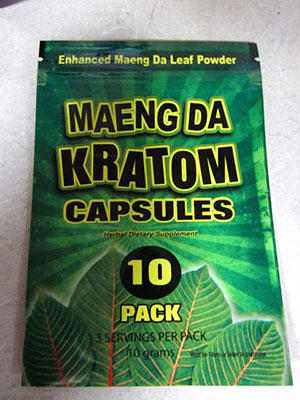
RECALLED – Maeng Da Kratom, Max Kratom, and Bali Kratom

March 14, 2014 – Product Recall – SNI National is Voluntarily recalling Kratom XL 4 Pack, Maeng Da Kratom 10 Pack, Max Kratom 20 Pack, and Bali Kratom 40 pack Due to Undeclared Drug Ingredients.